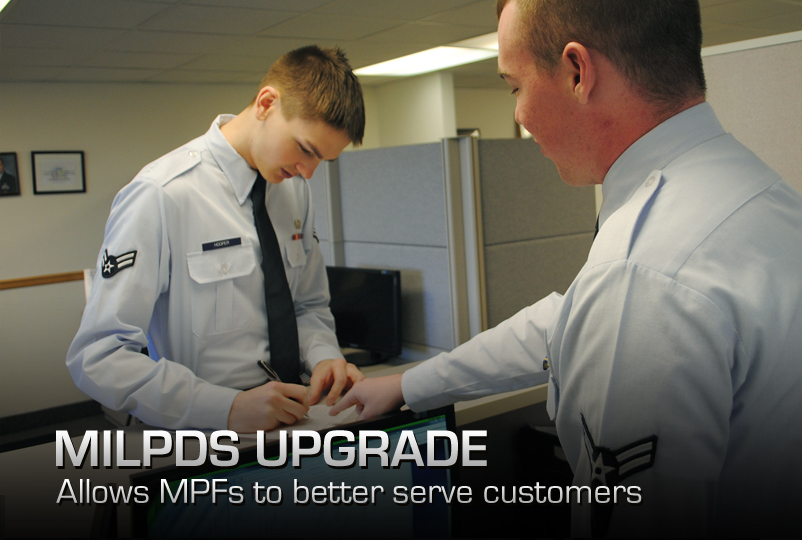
MilPDS Upgrade